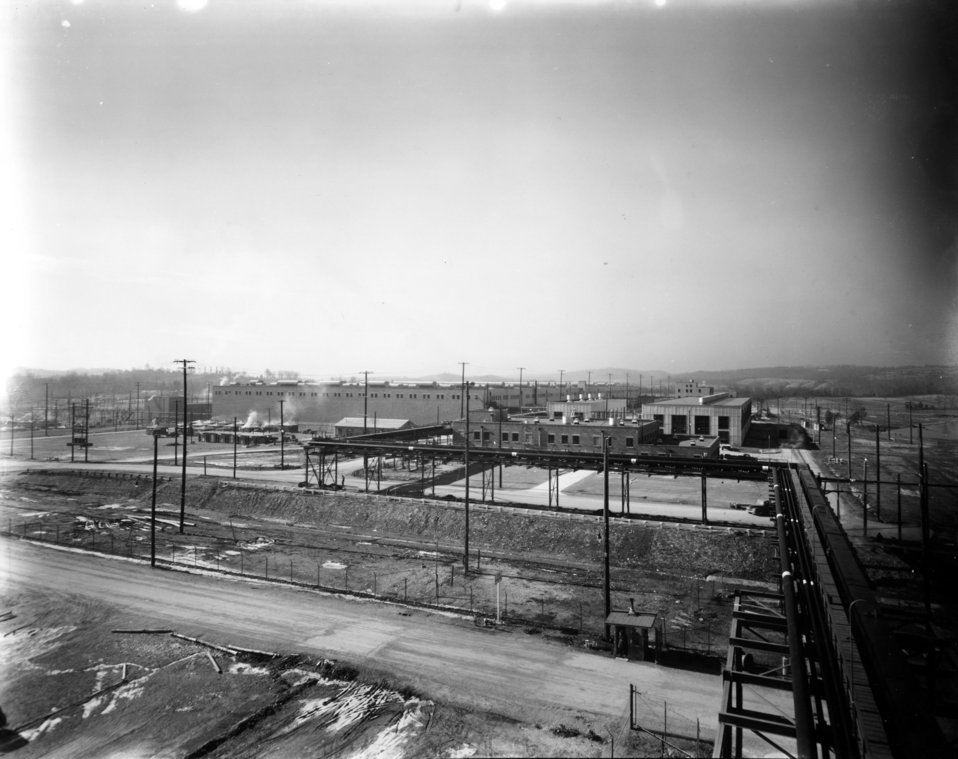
K-27 at Oak Ridge